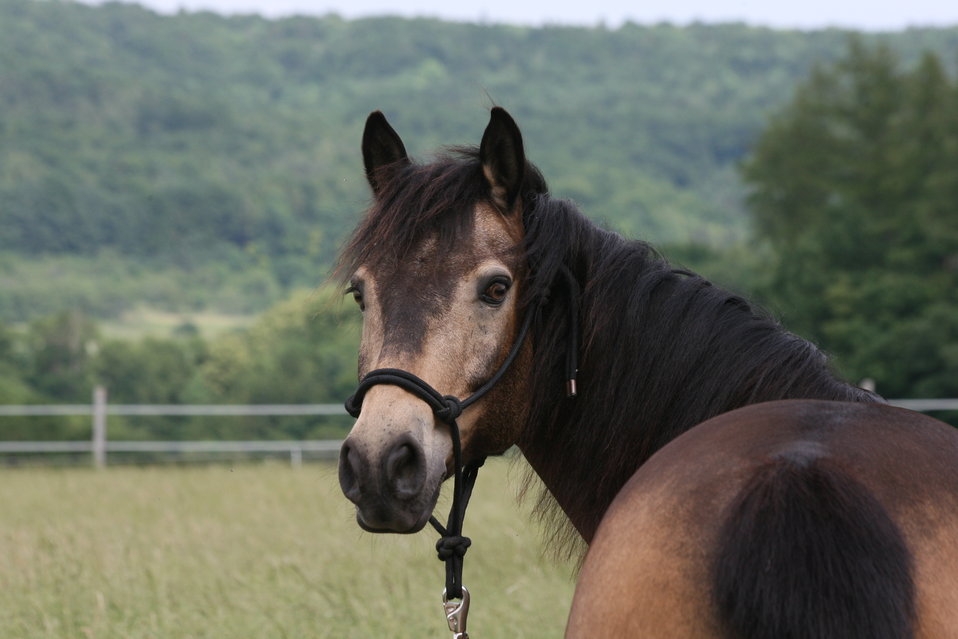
Deutsch: Connemara Wallach